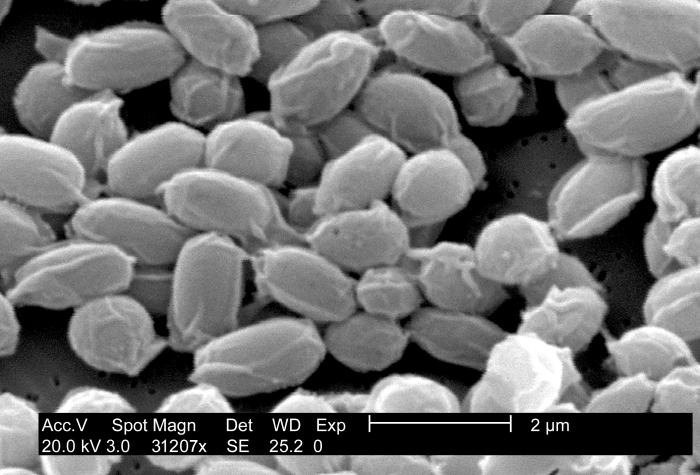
Under a very high magnification of 31,207X, this scanning electron micrograph (SEM) depicted spores from the Sterne strain of Bacillus anthracis bacteria. For a colorized version of this image see PHIL 10023.